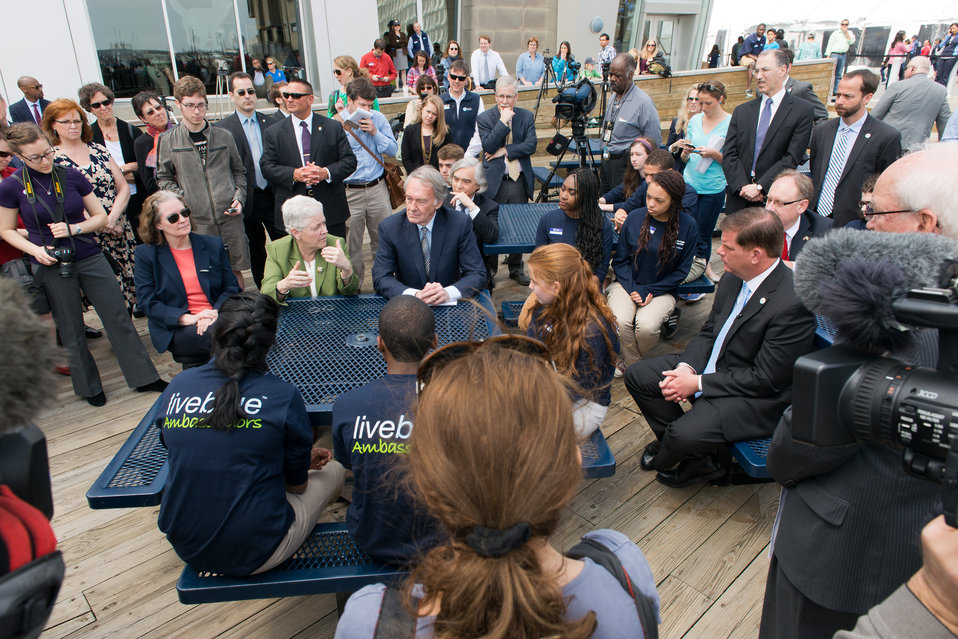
A Day In The Life of the EPA Administrator - April 22, 2014 12:31 pm

An all-star lineup turned out for the Earth Day event at the Boston Aquarium. McCarthy was joined by Energy Secretary Ernie Moniz, Boston Mayor Marty Walsh, and Senator Ed Markey, along with dozens of Bostonians interested in doing more on climate change.